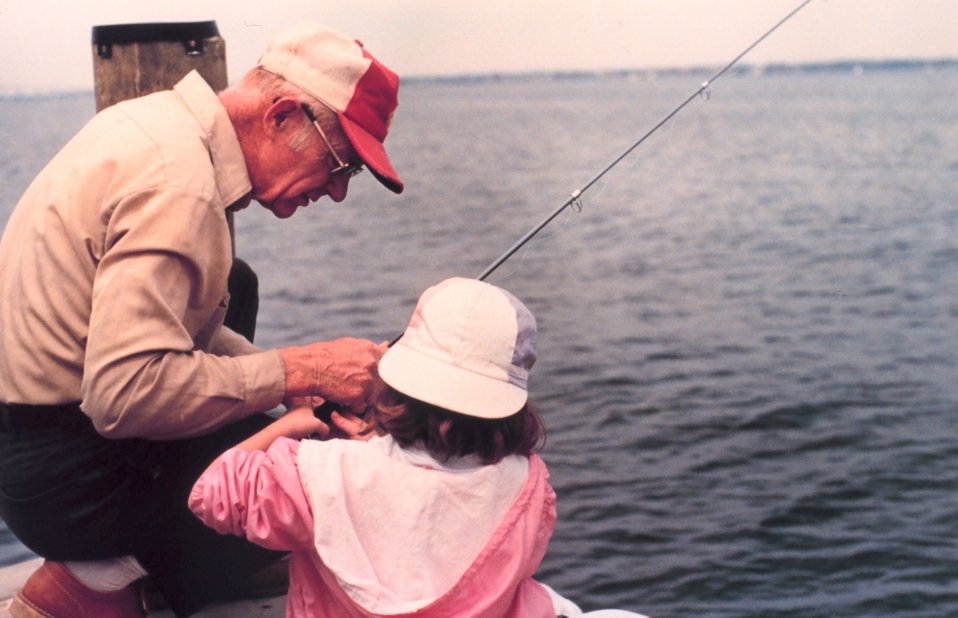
Passing knowledge of the bay and its ways from generation to generation.